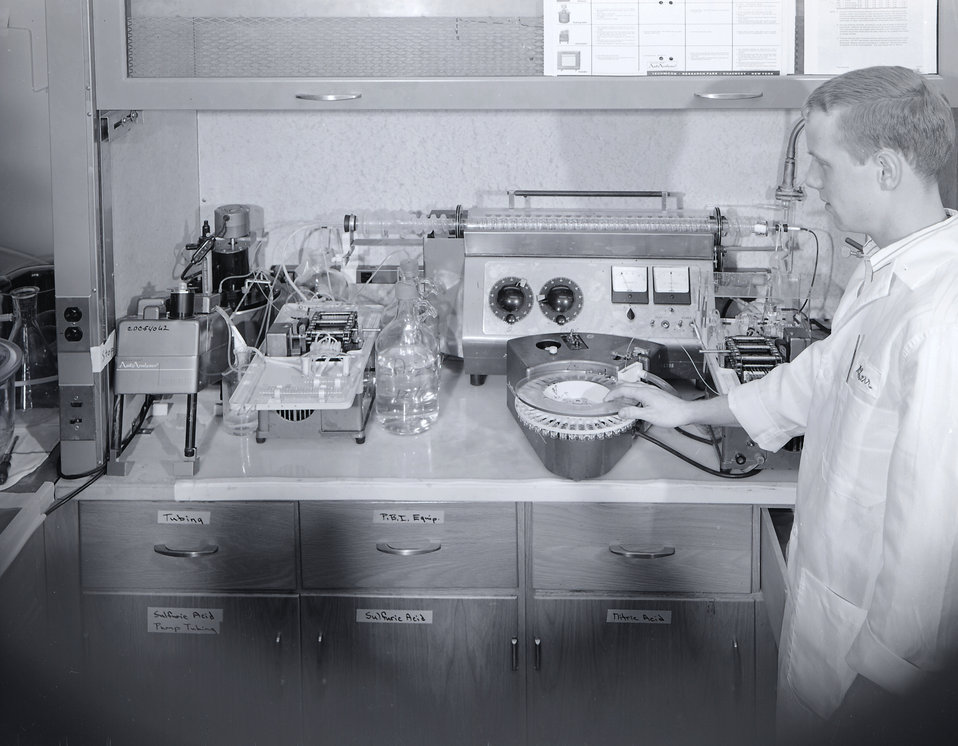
This historic 1966 image depicted a Centers for Disease Control's laboratory technician, as he was operating an AutoAnalyzer in order to conduct a protein-bound iodine (PBI) determination.